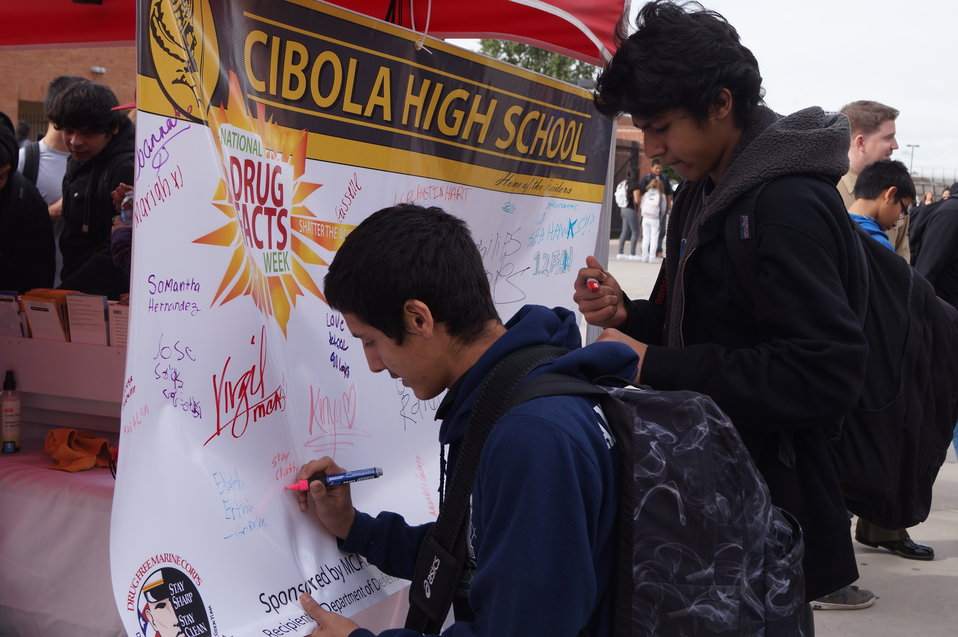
National Drug Facts Week - CIBOLA HS

The Drug Demand Reduction Program out of Yuma, Arizona held numerous events at local schools to support NIDA's National Drug Facts Week, Jan. 27-Feb. 2 2014. Teens participated in drug awareness games, and helped to Shatter the Myths about teen substance abuse.